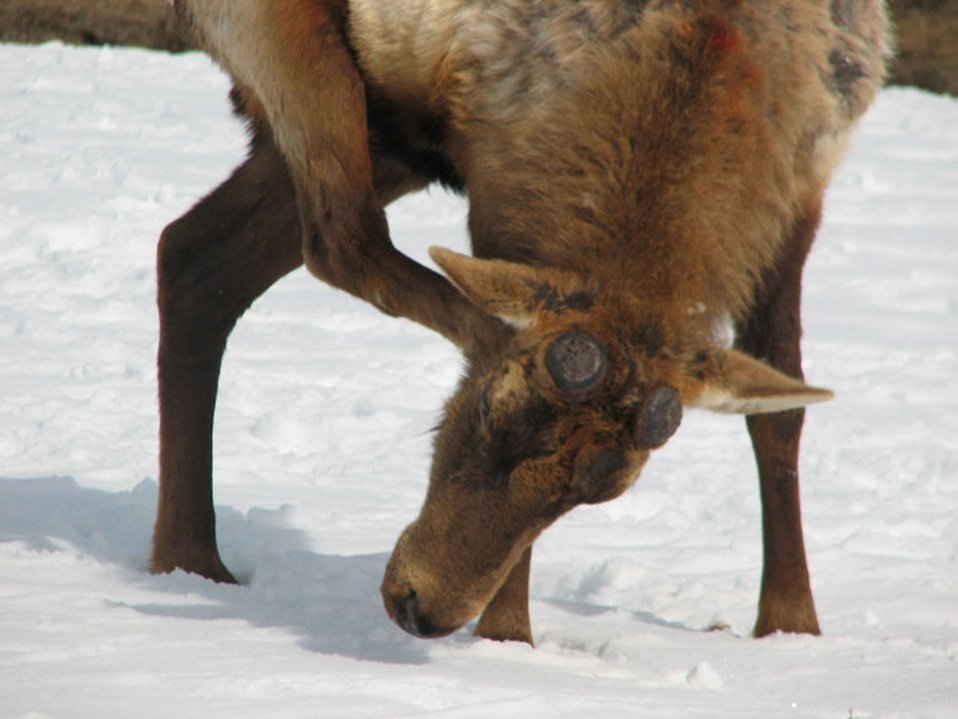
Bull Elk Without Antlers

A bull elk at the National Elk Refuge, shortly after losing his antlers. Before regrowth of the new antlers begins, a scab will form. A new set of antlers will start to grow after approximately 10 days.